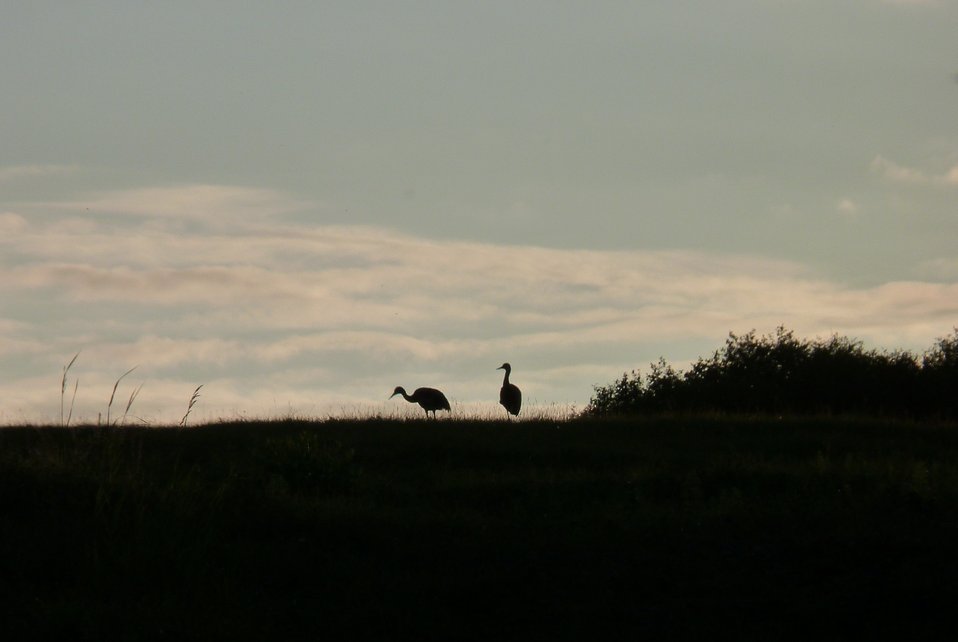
Sandhill Crane

Andreafsky wilderness, Yukon Delta National Wildlife Refuge